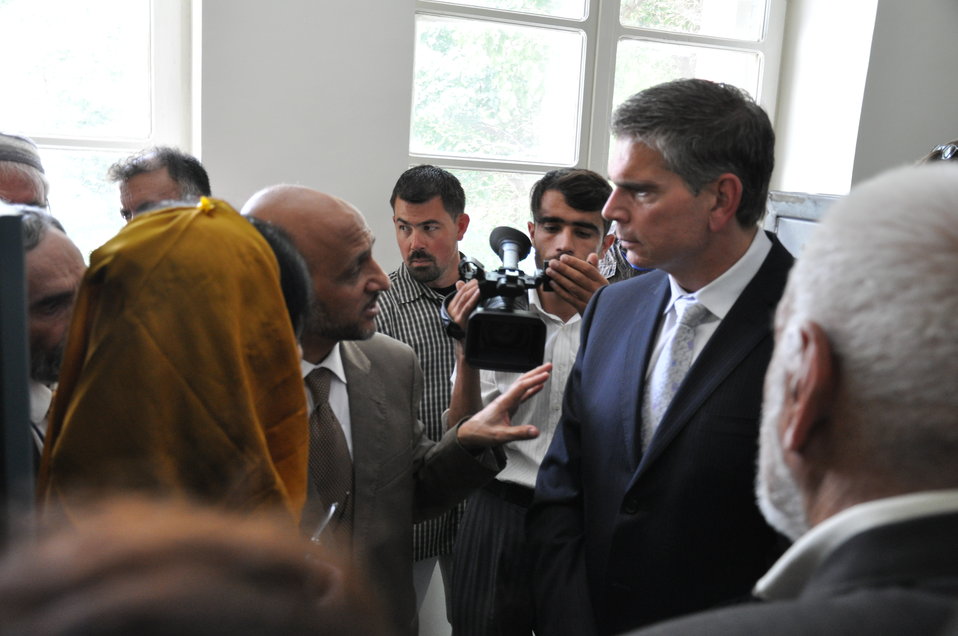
Kabul University Herbarium